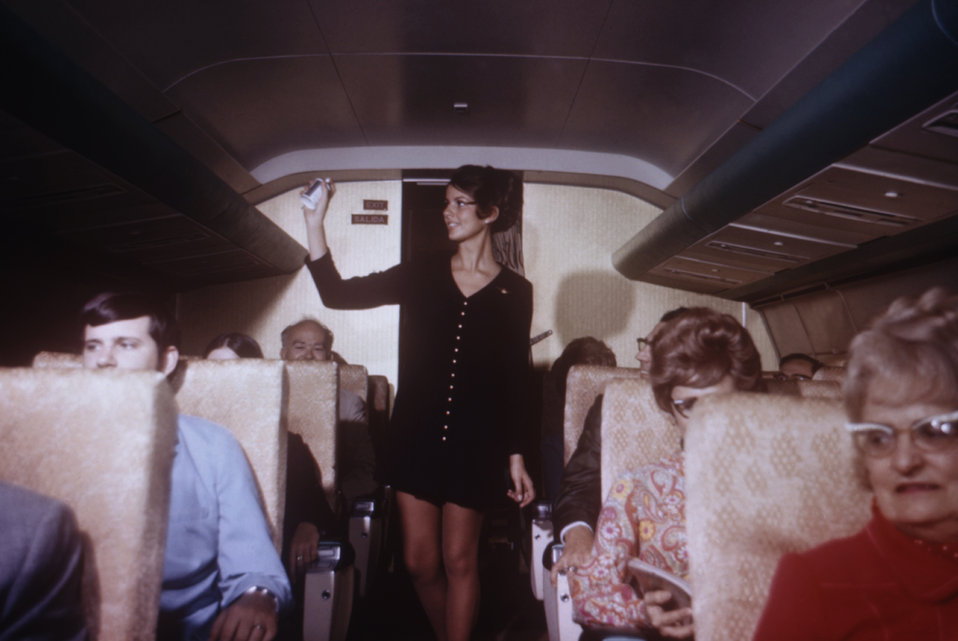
This is a 1971 photograph showing an airline employee spraying inside an aircraft with an aerosol pesticides spray.